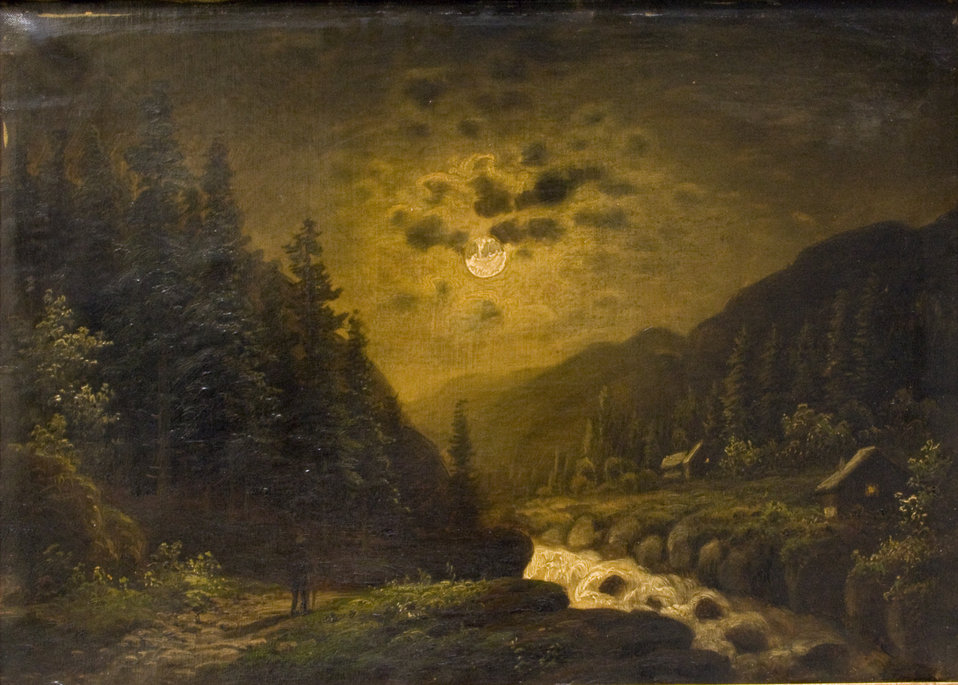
Deutsch: Wanderer im Mondschein. Signiert A. Forstmann. 65,5 x 47,5 cm